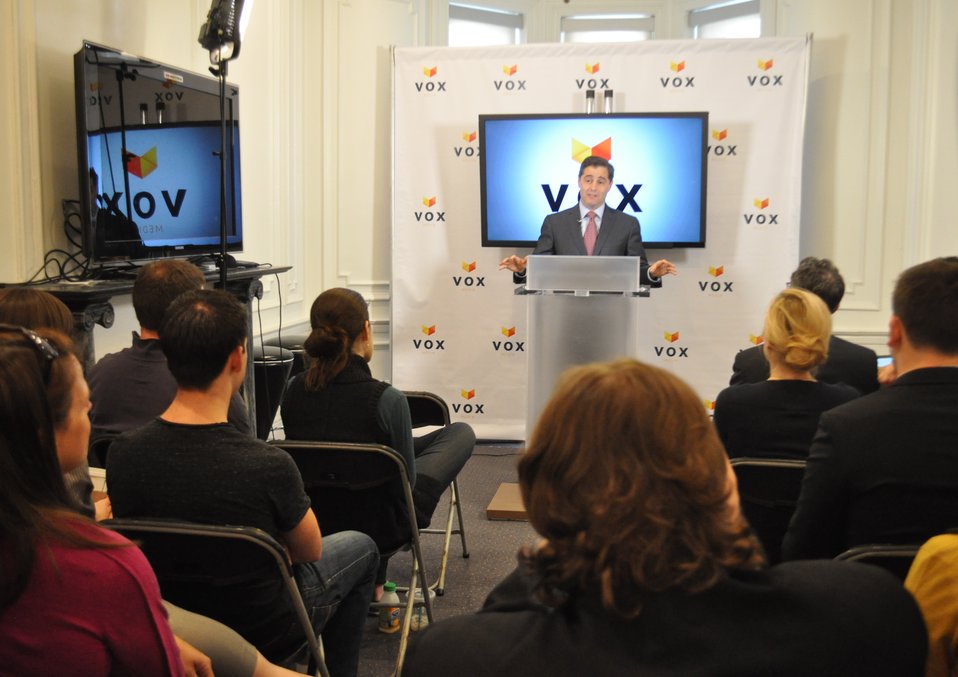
Broadband Challenges and Opportunities, at Vox Media - DSC 0700